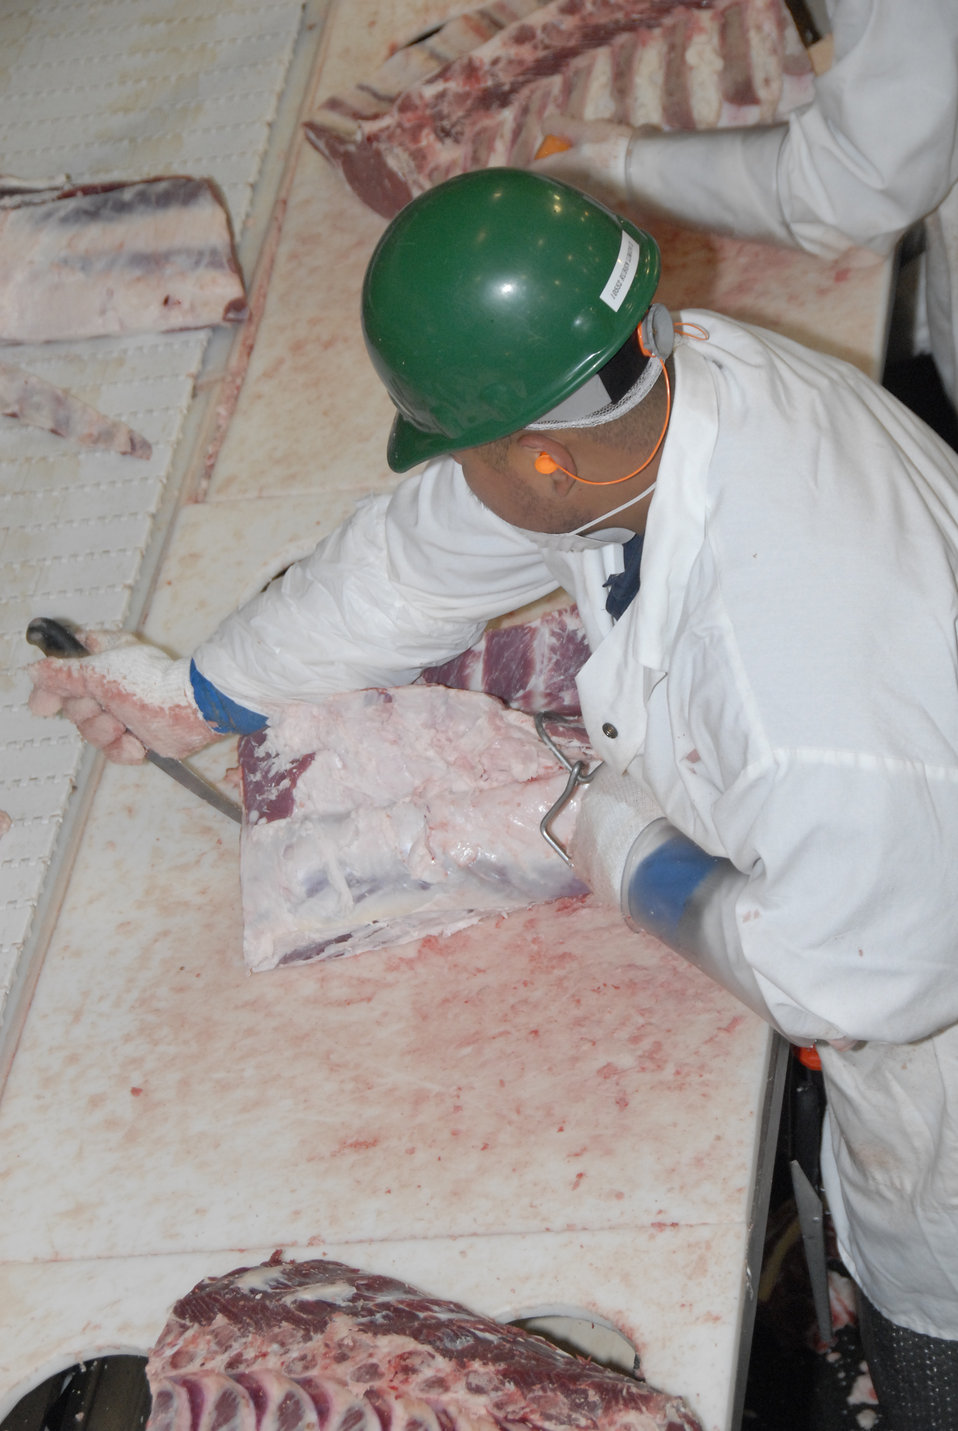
Workers at the Sam Kane beef slaughterhouse in Corpus Christi, Texas on June 10, 2008 dissect, sort and separate beef parts. U.S. Department of Agriculture (USDA) Food Safety and Inspection Service (FSIS) inspectors are on site to ensure the beef is processed in accordance with USDA FSIS regulations.